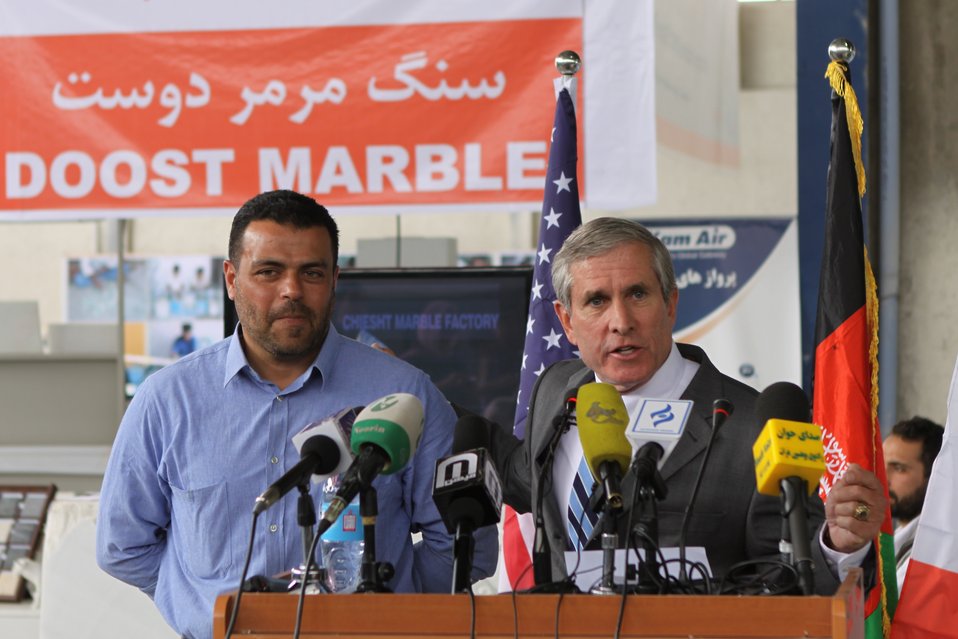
100525 Hirat Marble Conference 291